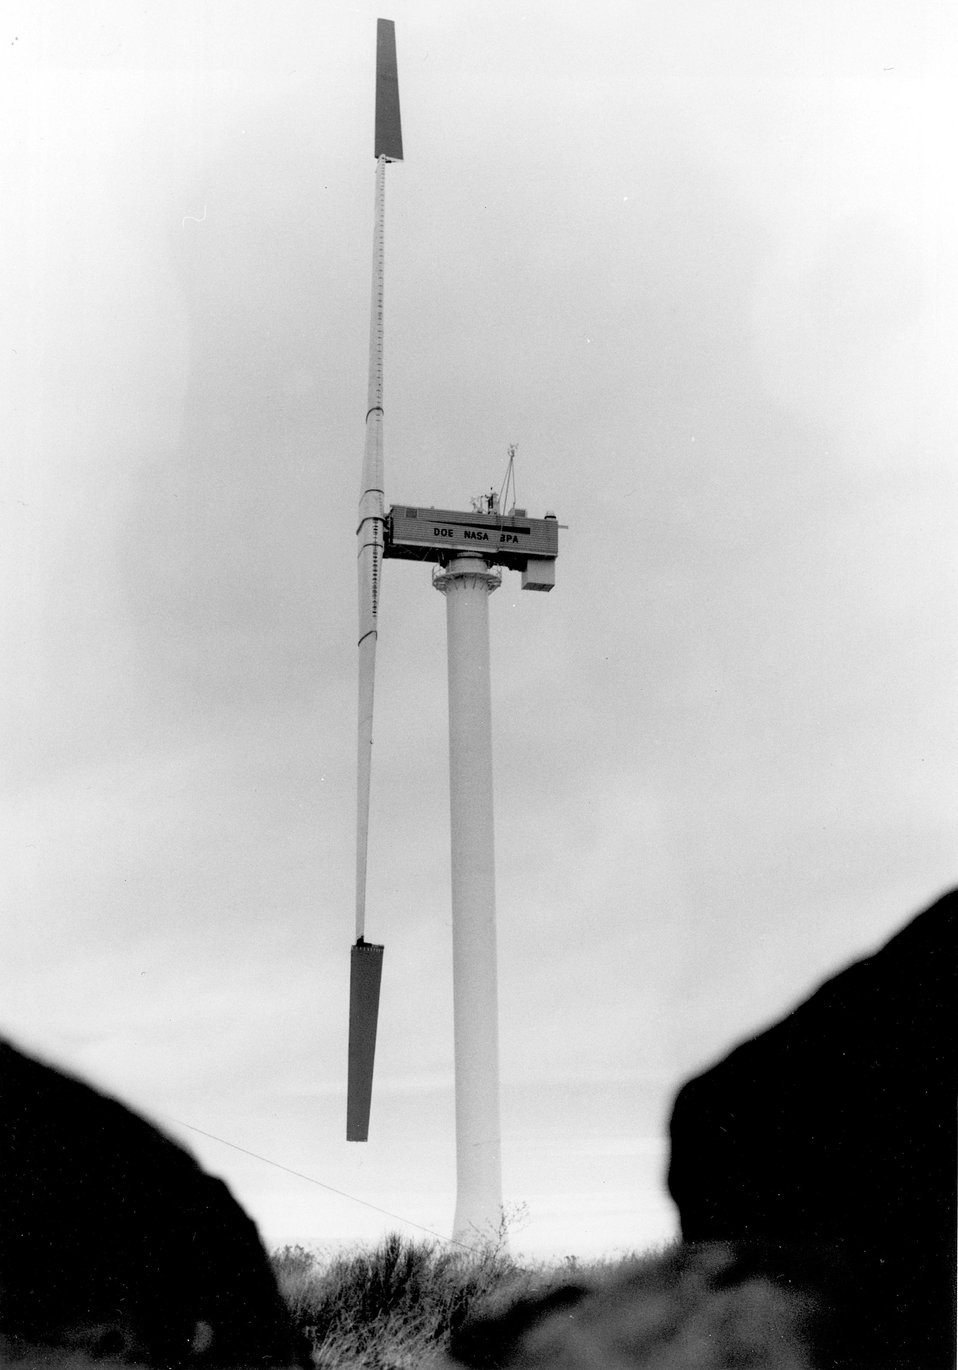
The Nation's first large experimental windfarm consisting of three machines each producing 2.5 magawatts (million watts), was officially dedicated May 29, 1981, at Goodnoe Hills, Washington. c. 1981